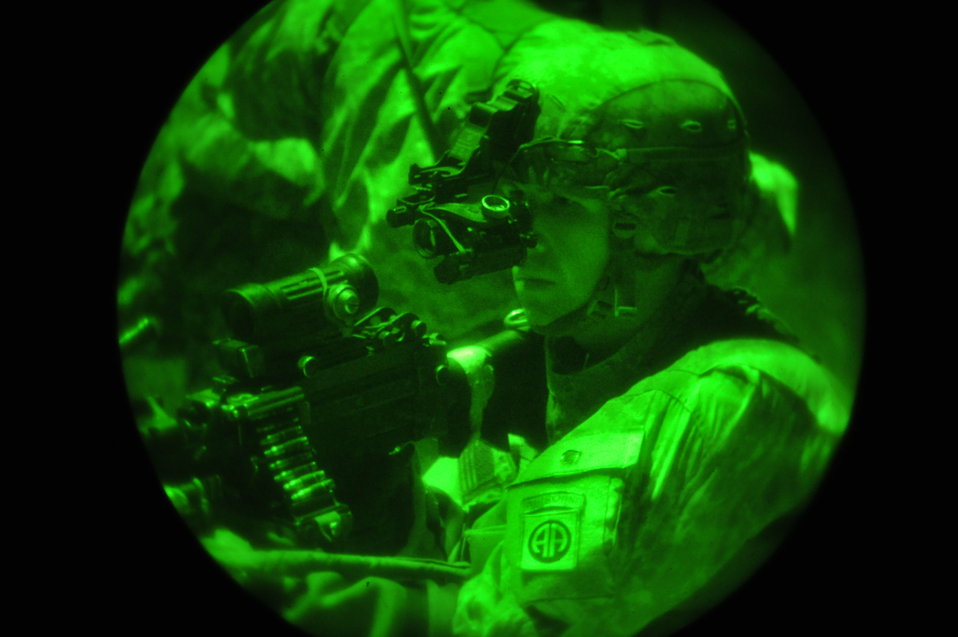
A U.S. Army Soldier provides rear security for a building search during Joint Operations Access Exercise 12-01 in Fort Bragg, N.C., Feb. 12, 2012. The JOAX is a combined effort between the U.S. Army, U.S. Air Force and Canadian armed forces to complete a night airborne operation with follow-on missions, which replicate possible real world scenarios.